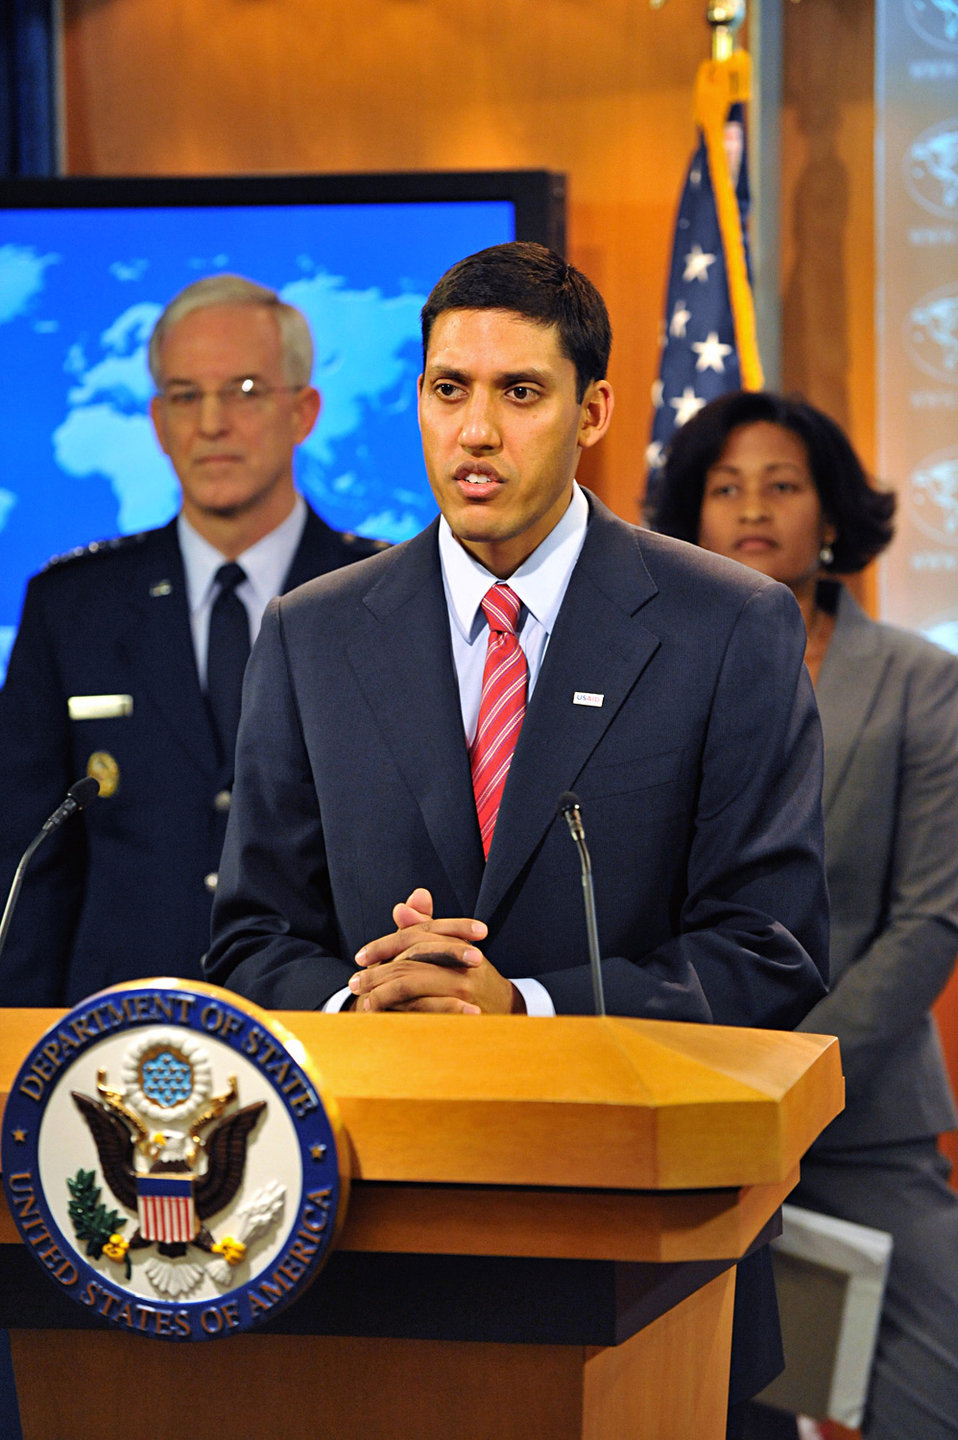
USAID Administrator Raj Shah at Special Briefing on Haiti

U.S. Agency for International Development Raj Shah delivers remarks on the situation in Haiti during special briefing at the State Department, Washington, January 13, 2010. U.S. SOUTHCOM Commander General Douglas Fraser and State Department Counselor Cheryl Mills stand behind him.